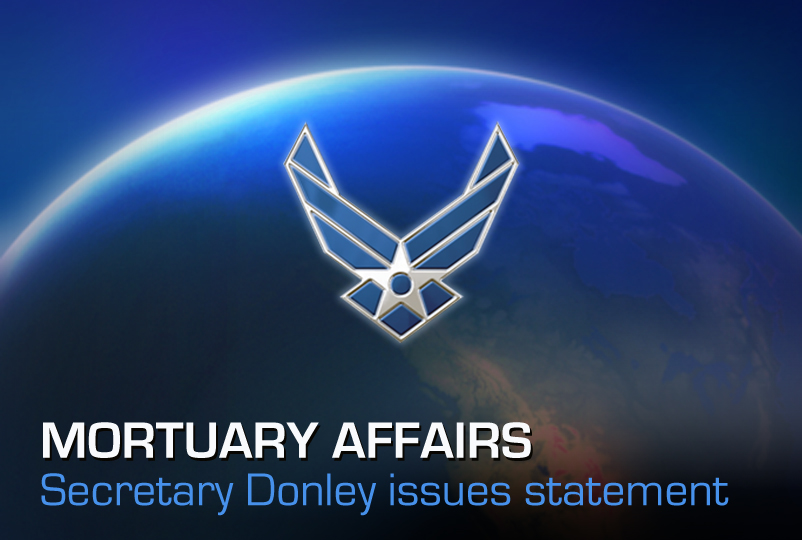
Mortuary Affairs